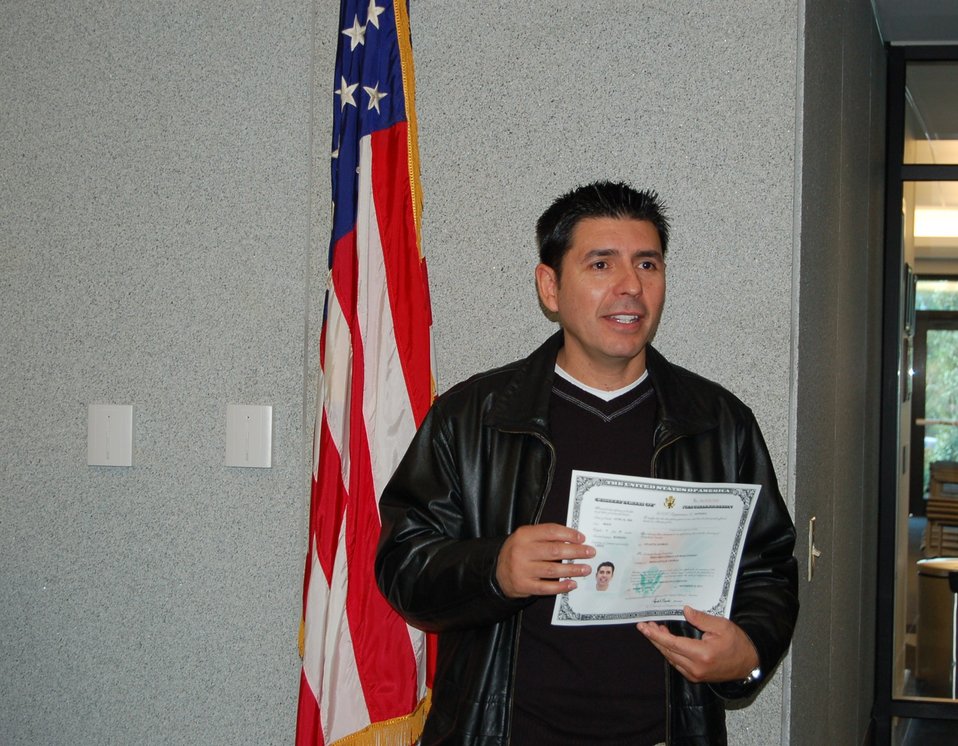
New Citizens